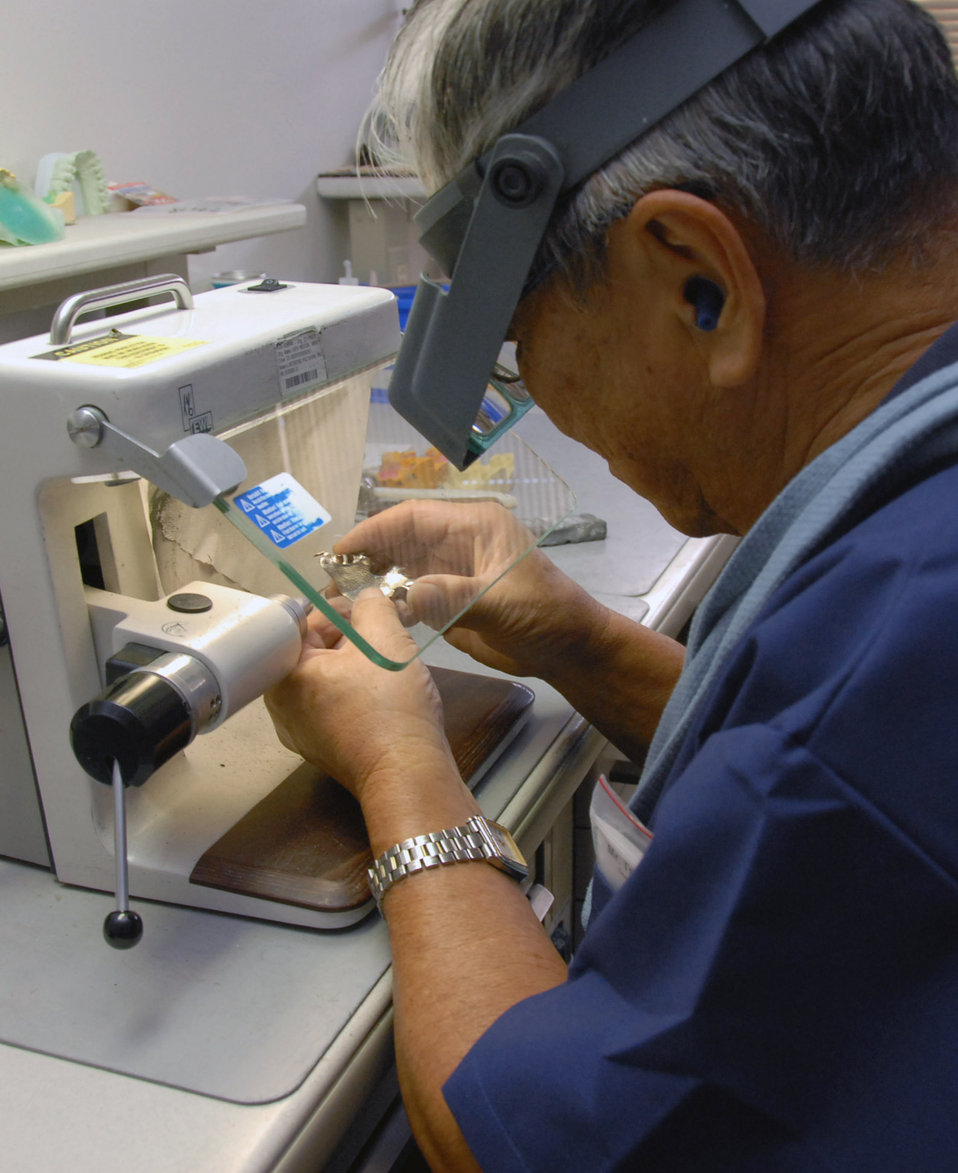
Kadena's labs sculpt bright smiles

Tsunoda Warren, a dental lab technician with the 18th Dental Squadron's area dental lab, polishes a completed metal framework. Both the area dental lab and base dental lab produce a variety of dental prosthodontics including gold crowns, complete dentures, hard night guards, and soft or sport mouth guards and retainers.